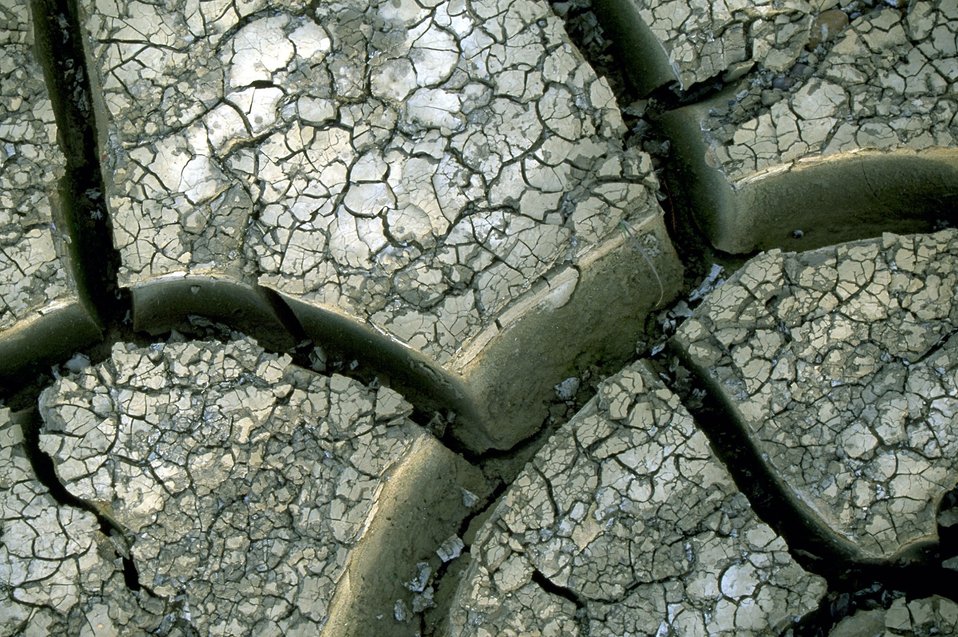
Mud cracks along the banks of the Powder River